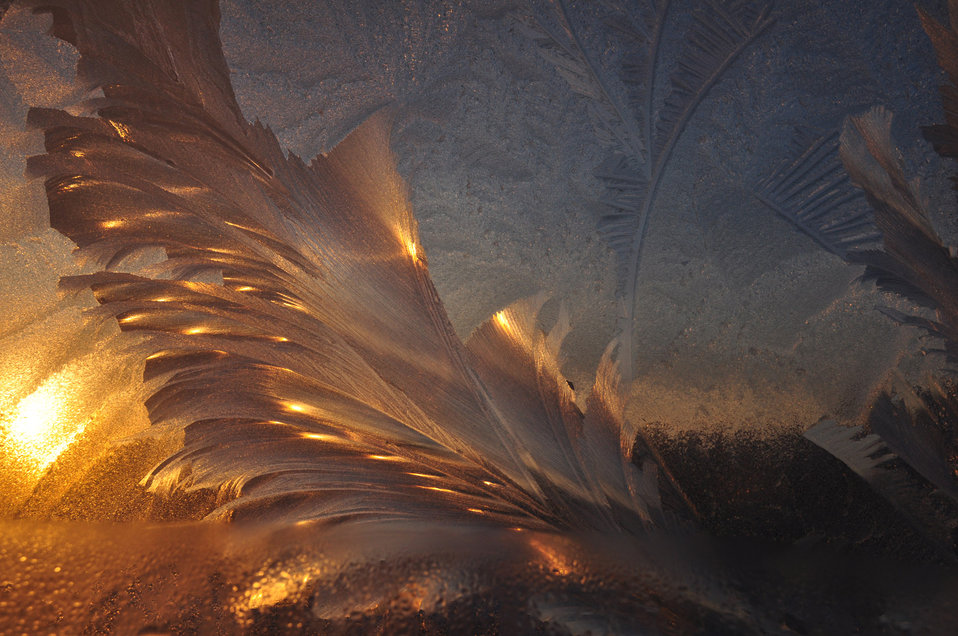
Frost on window.